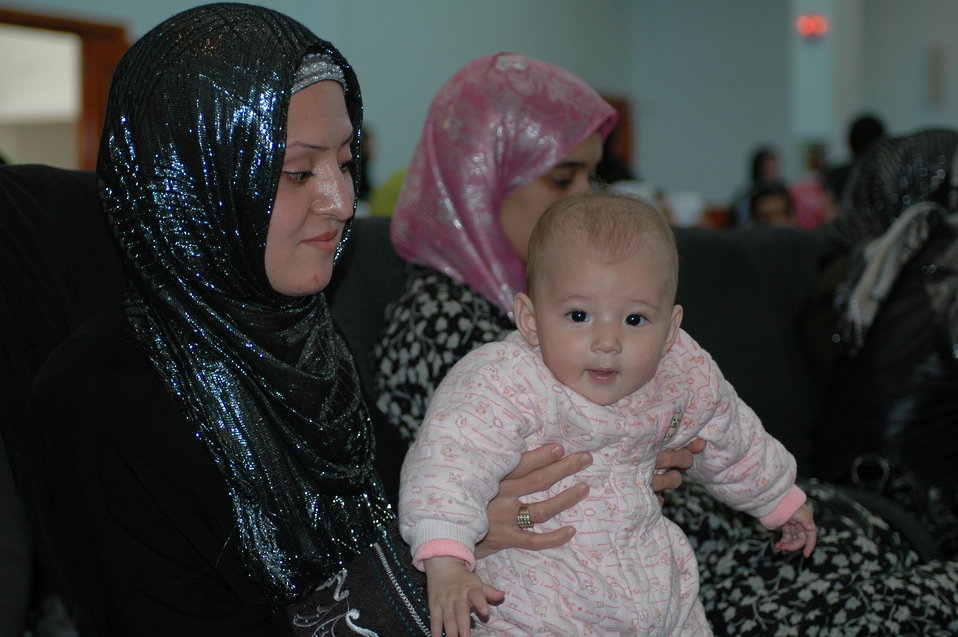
Midwifery4